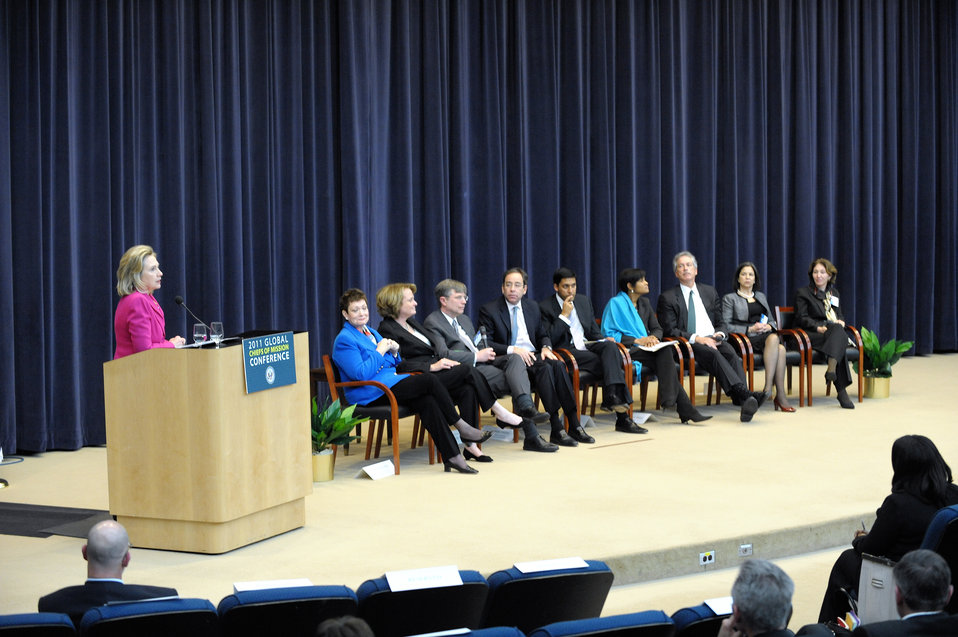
Secretary Clinton Participates in the Town Hall

U.S. Secretary of State Hillary Rodham Clinton participates in the Town Hall during the 2011 Global Chiefs of Mission Conference at the U.S. Department of State in Washington, D.C., on February 3, 2011. Sitting from left to right: Under Secretary of State or Arms Control and International Security Ellen Tauscher, Under Secretary of State for Public Diplomacy and Public Affairs Judith McHale, Under Secretary of State for Management Patrick Kennedy, Deputy Secretary of State for Management and Resources Thomas R. Nides, USAID Administrator Rajiv Shah, Counselor Cheryl Mills, Under Secretary of State for Political Affairs William J. Burns, Under Secretary of State for Democracy and Global Affairs Maria Otero, and Policy Planning Director Dr. Anne Slaughter.